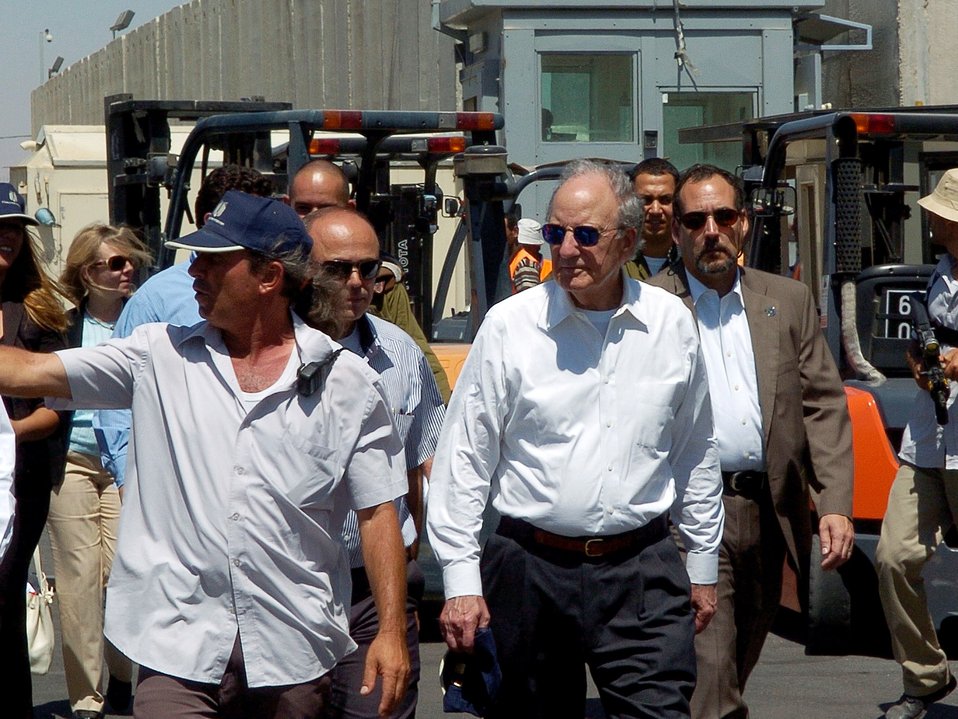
Special Envoy Mitchell Visits the Kerem Shalom Crossing

U.S. Special Envoy for Middle East Peace George Mitchell visits the Kerem Shalom crossing on the border of the Gaza Strip on June 30, 2010.